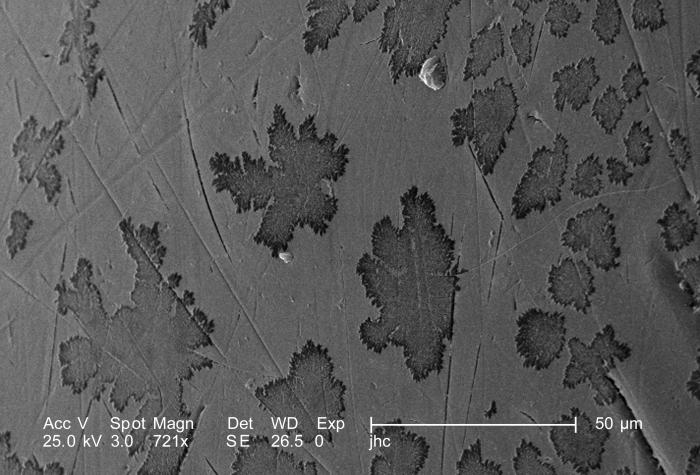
Magnified 721X, this scanning electron micrograph (SEM) revealed some of the ultrastructural details found on the surface of one of the two eyes of this adult 'figeater' beetle, Cotinis mutabilis. The meaning behind the 'leaf-like' pattern seen on the eye's chitinous surface is unknown, however, when carefully scrutinized, it does not appear to be randomized. Note PHIL 9950 and 9952 for other views of this configuration.